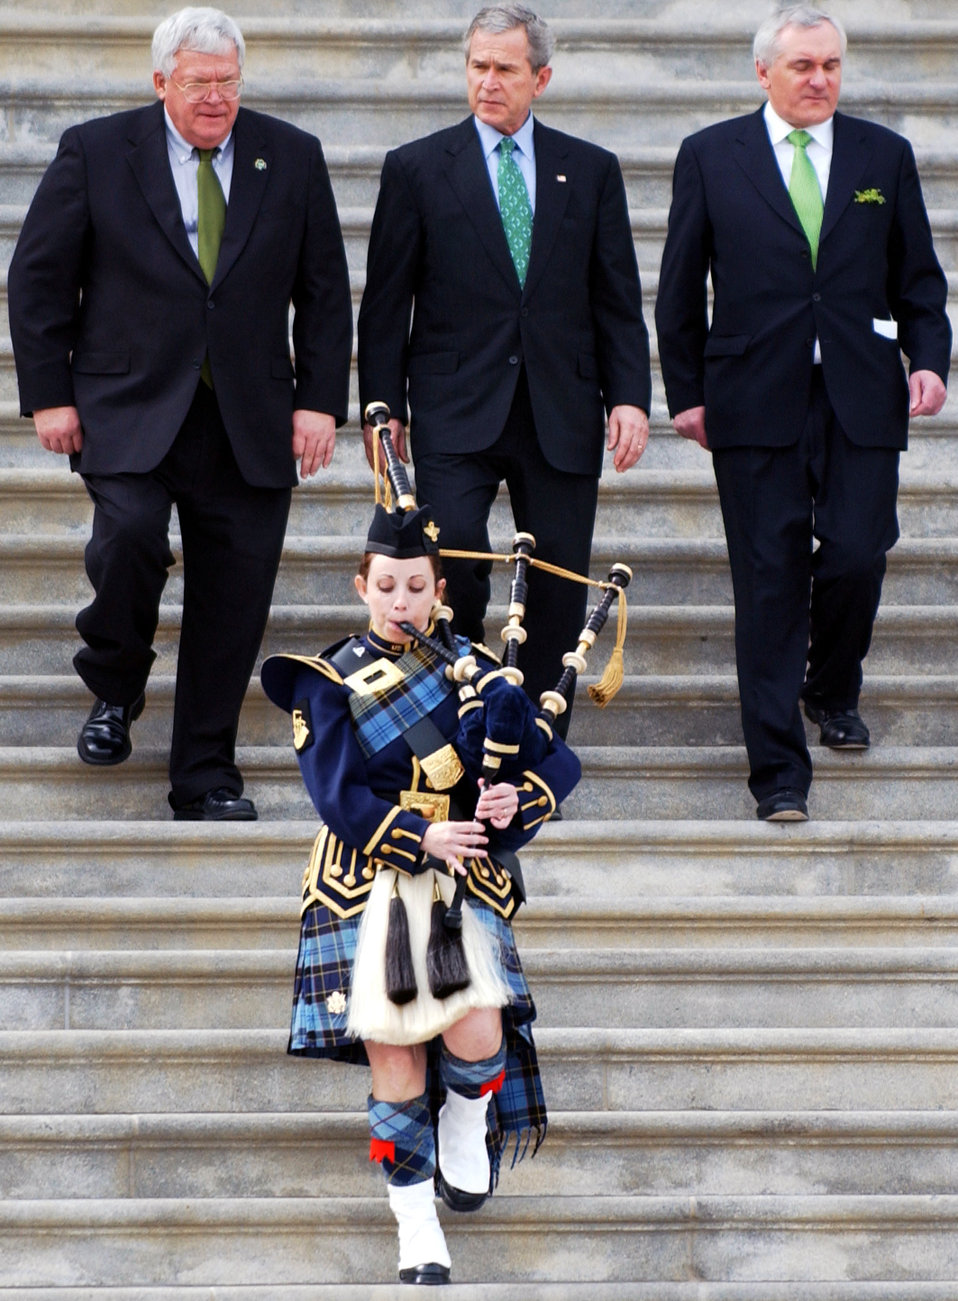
Follow the music

WASHINGTON -- Tech. Sgt. Janis Thirft leads, from left, Speaker of the House Dennis Haspert, President George Bush and Irish Prime Minister Bertie Ahern during a Saint Patrick's Day event here March 17. Sergeant Thirft is a bagpiper with the Air Force Reserve Pipe Band.